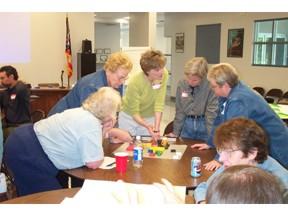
Fernald stakeholders

EM is committed to working to build relationships and earning public trust, one way EM does this is through numerous public meetings. At Fernald, DOE and contractor project managers, regulators and citizens shared a stake in the decision process and worked together to find practical, balanced solutions to complex cleanup issues.